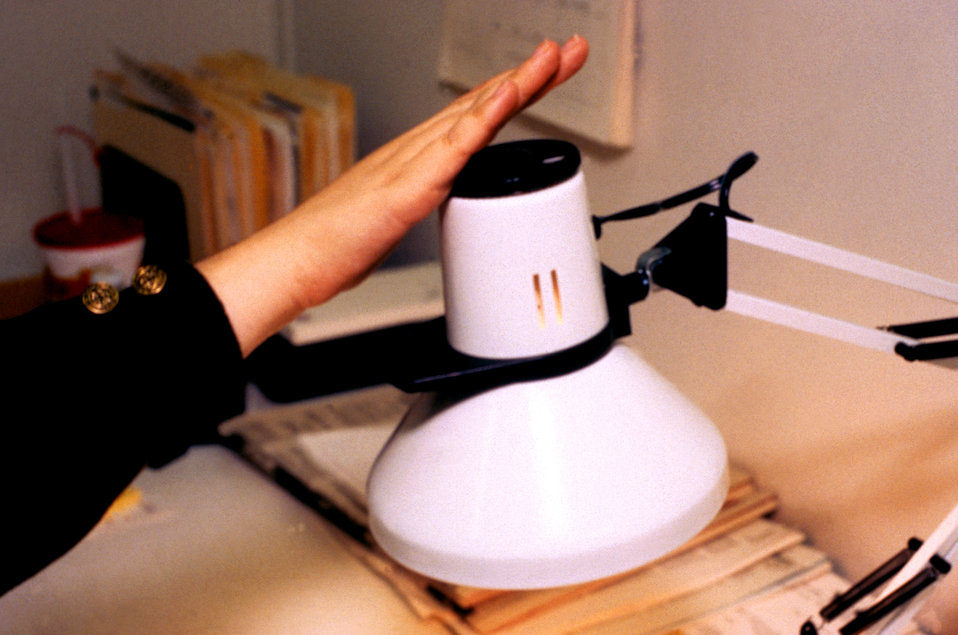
This 1996 image depicted a person turning on an articulated-arm desk lamp by using the palm of her hand, and pressing against the top of the lamp, at which point she's able to rotate the large, knurled disk, which is connected to the switch itself. The large size meant that people with limited grasp, or hand strength could activate such a switch with minimal effort. It also meant that less force was needed to turn the lamp on or off. This added feature would make the user's activity a relatively effortless experience. 'The Center for Universal Design (CUD) is a national research, information, and technical assistance center that evaluates, develops, and promotes accessible and universal design in housing, buildings, outdoor and urban settings and related products.'